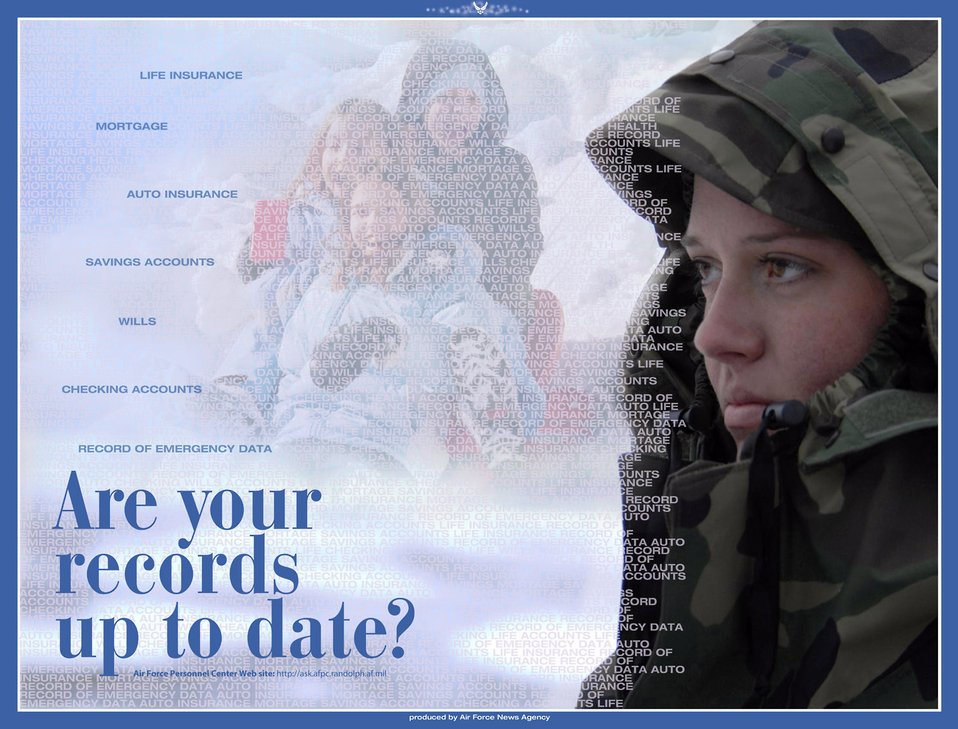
Updating personnel records readiness vital to mission

Airmen are reminded to review such items as their virtual record of emergency data, or vRed, and personal information in the Virtual Military Personnel Flight at http://ask.afpc.randolph.af.mil.